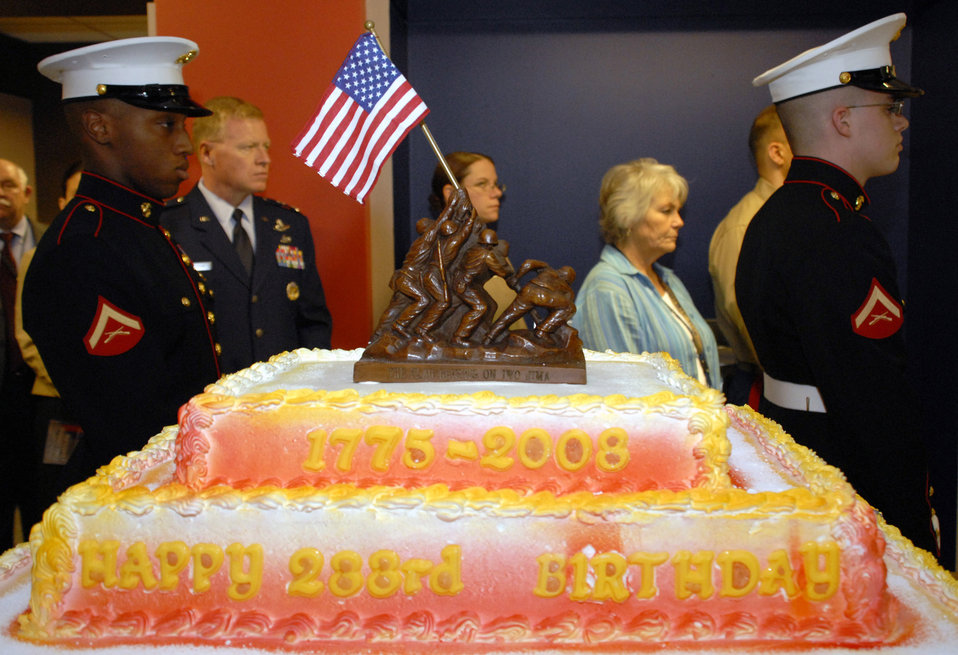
Happy birthday, U.S. Marine Corps

The United States Marine Corps celebrates its 233rd birthday with a cake topped with a replica of the Marine Corps Memorial. More than 100 Marines, Sailors, civilians and other members of the joint staff joined Gen. James T. Conway, commandant of the Marine Corps, and Secretary of the Navy Donald C. Winter at a birthday celebration Nov. 7 in the newly-opened Marine Corps Corridor in the Pentagon. The Marine Corps was founded on Nov. 10, 1775.